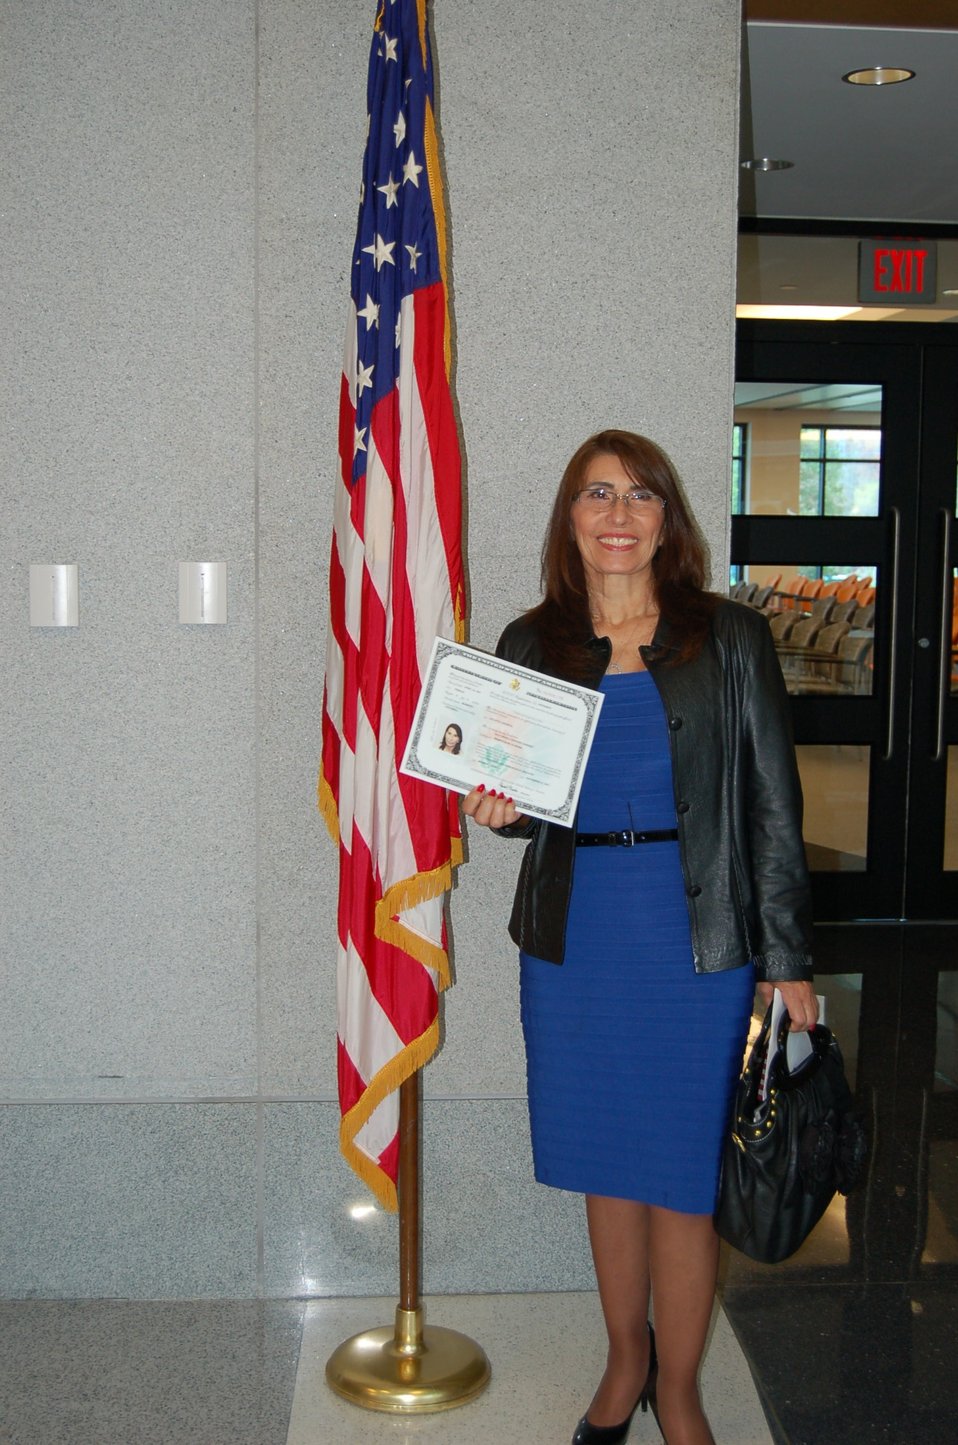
New Citizens